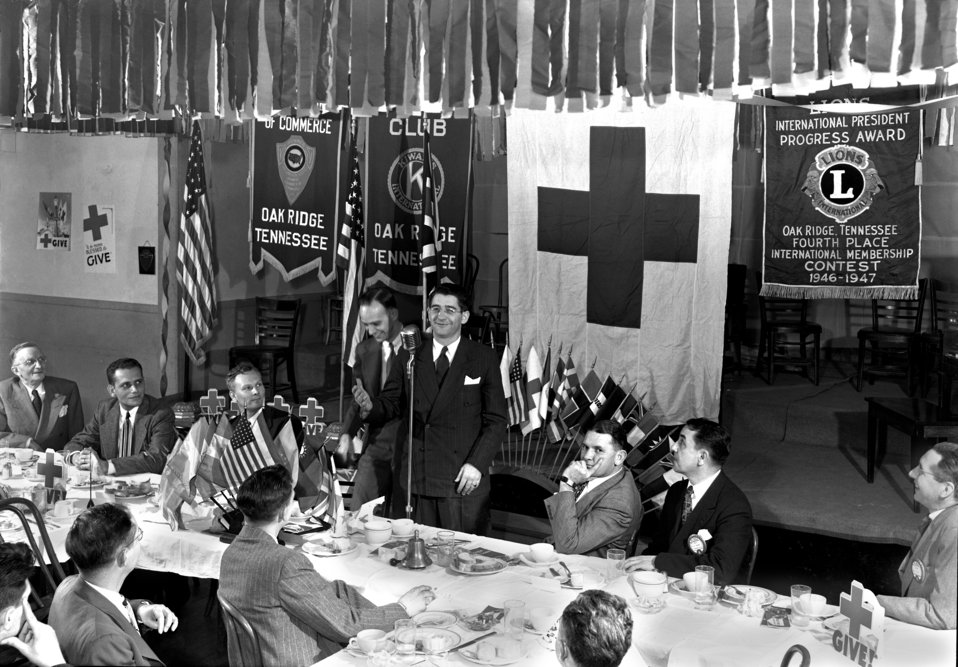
Red Cross Joint Dinner Oak Ridge 1948

4333 DOE photo Ed Westcott 2-23-1948 Oak Ridge Tennessee Red Cross Joint Dinner Drive Kick-Off and Civic Group Meeting Together